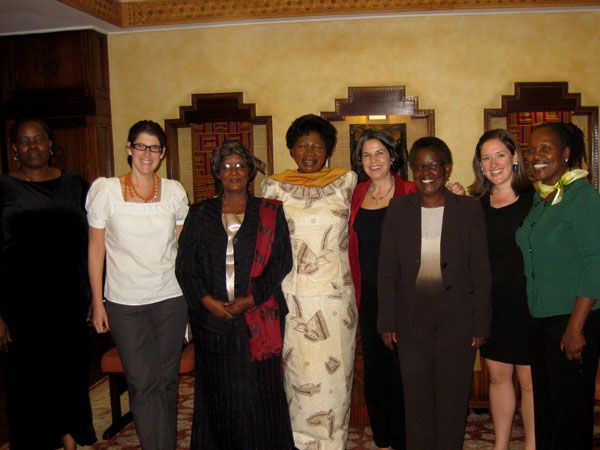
Under Secretary Otero Meets With Kenyan Women Leaders

U.S. Under Secretary for Democracy and Global Affairs Maria Otero meets with five Kenyan women who have dedicated their lives to the pursuit of human rights and women's empowerment, January 28, 2010, Nairobi, Kenya.